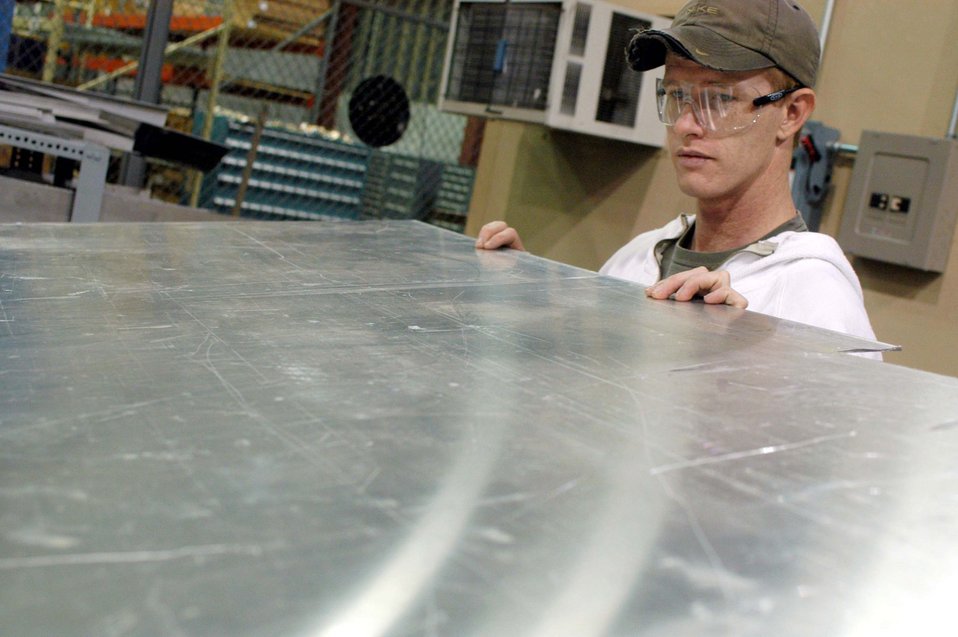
From sheet metal to aircraft

ROBINS AIR FORCE BASE, Ga. -- George Wells pulls stock sheet metal for upcoming repairs. Mr. Wells is one of 53 who works in the maintenance directorate's sheet metal shop here.